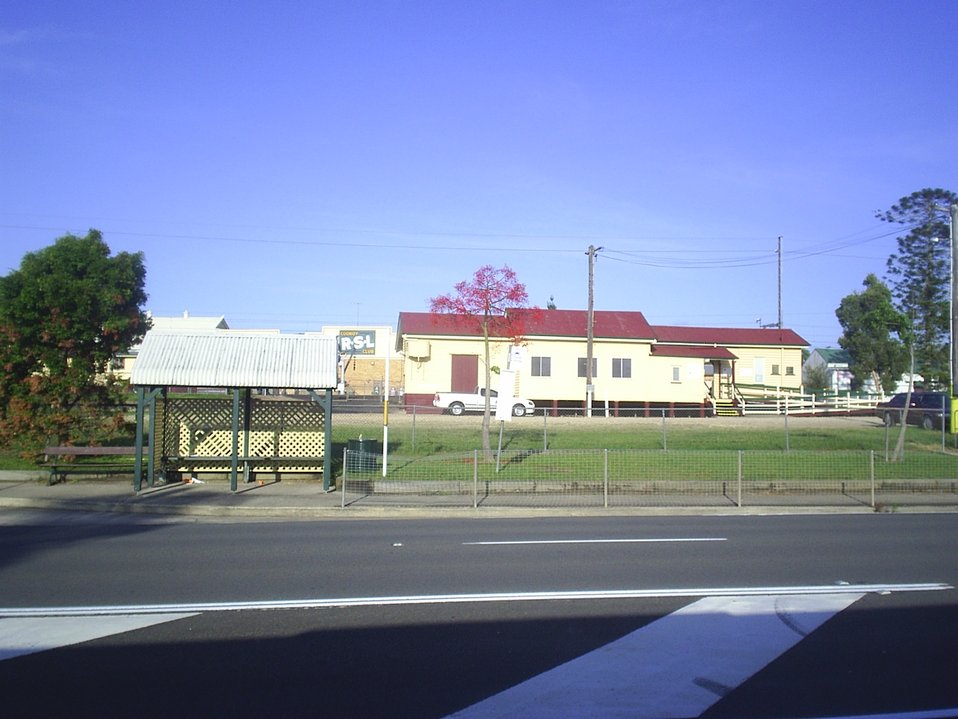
QR Cooroy Station. Taken by Qld matt 14:29, 22 December 2006 (UTC)